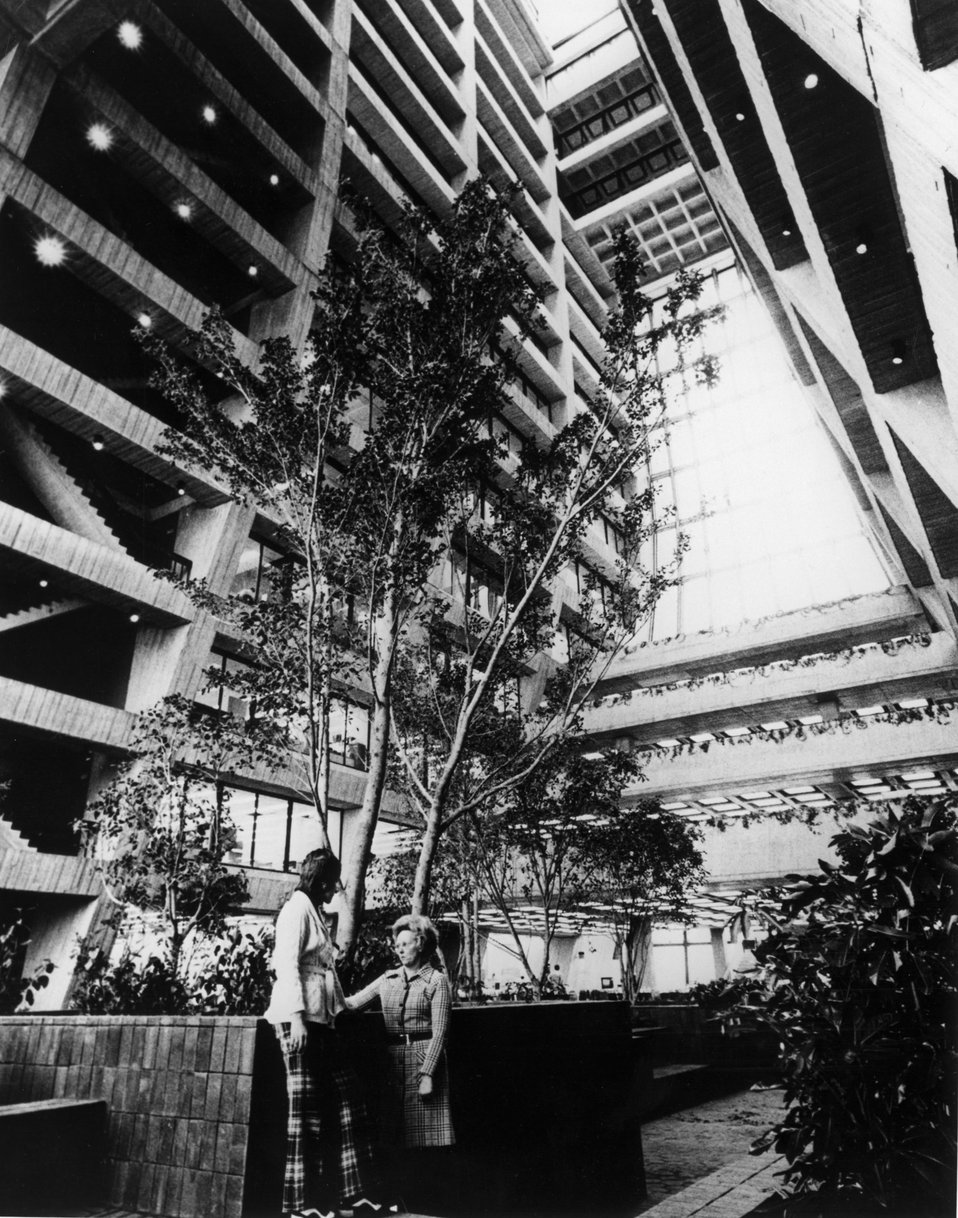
The Atrium on the main floor of the Central Laboratory at the National Accelerator Laboratory. c. 1974